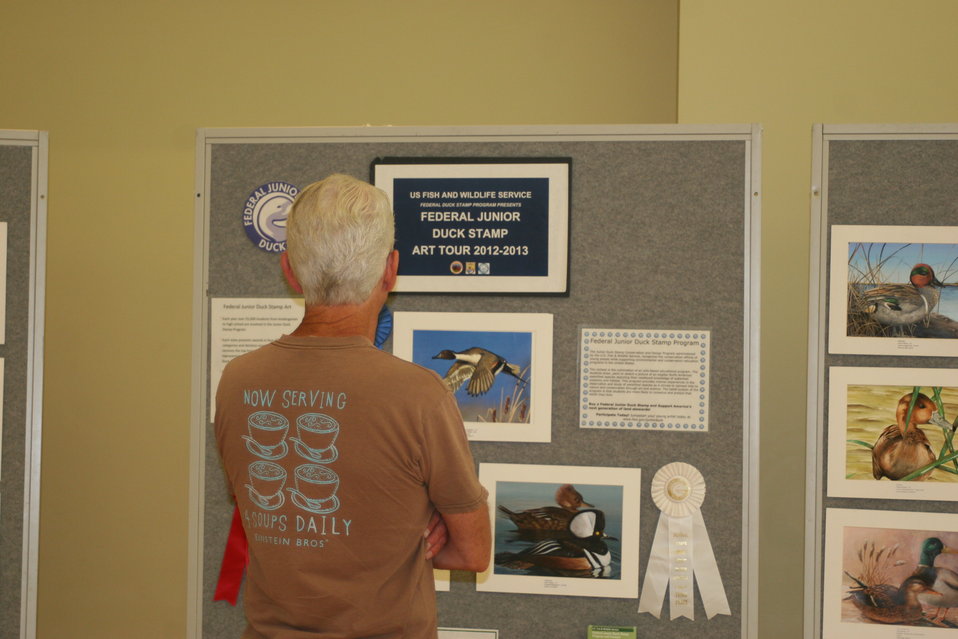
Artwork Viewing

Photo Credit: Suzanne Fellows / USFWS
The U.S. Fish & Wildlife Service sponsored the 2012 Federal Duck Stamp Art Contest September 28 and 29 in Ogden, Utah, at Weber State University. A panel of five judges was responsible for choosing the art work used to design the 2013-2014 Migratory Bird Hunting and Conservation Stamp.